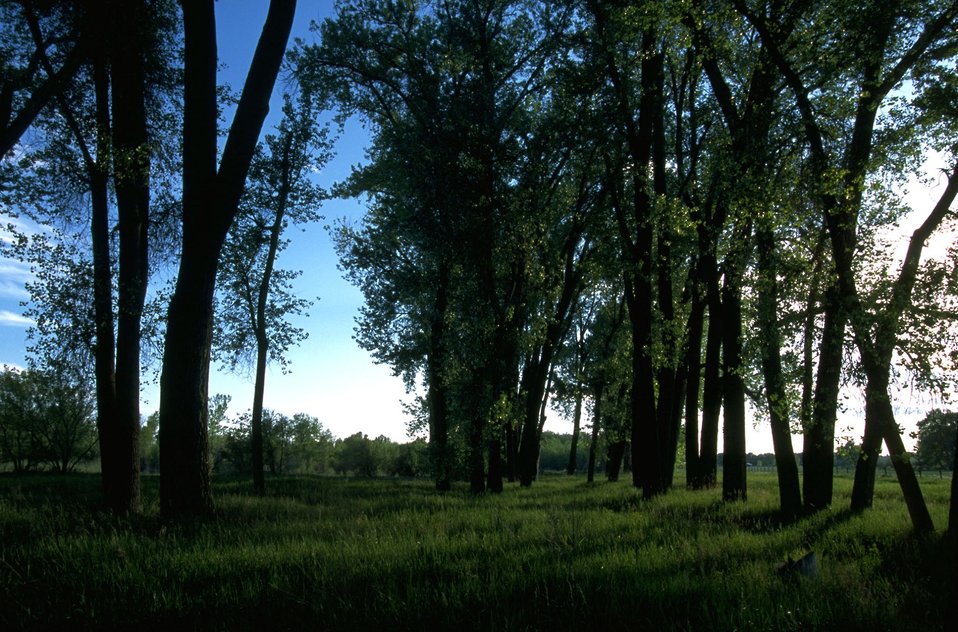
Cottonwood trees in the Sundance Lodge Recreation Area